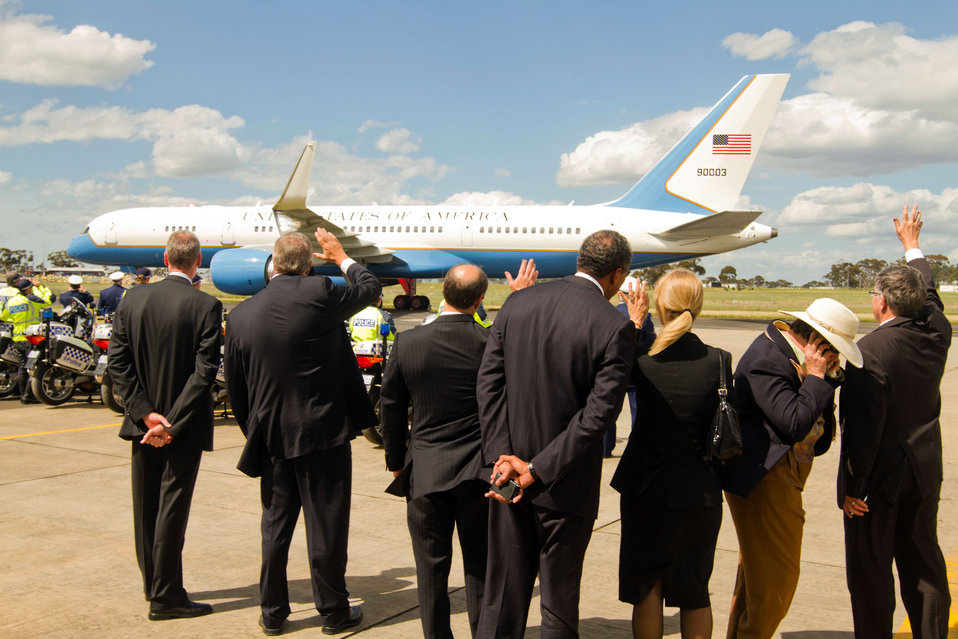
Ambassador Bleich, Consul General Thurston, and U.S. Mission Australia Staff Members Wave Goodbye to Secretary Clinton

U.S. Ambassador to Australia Jeff Bleich, U.S. Consul General Thurston, and other U.S. Mission Australia staff members wave goodbye to U.S. Secretary of State Hillary Rodham Clinton in Melbourne, Australia, on November 8, 2010.